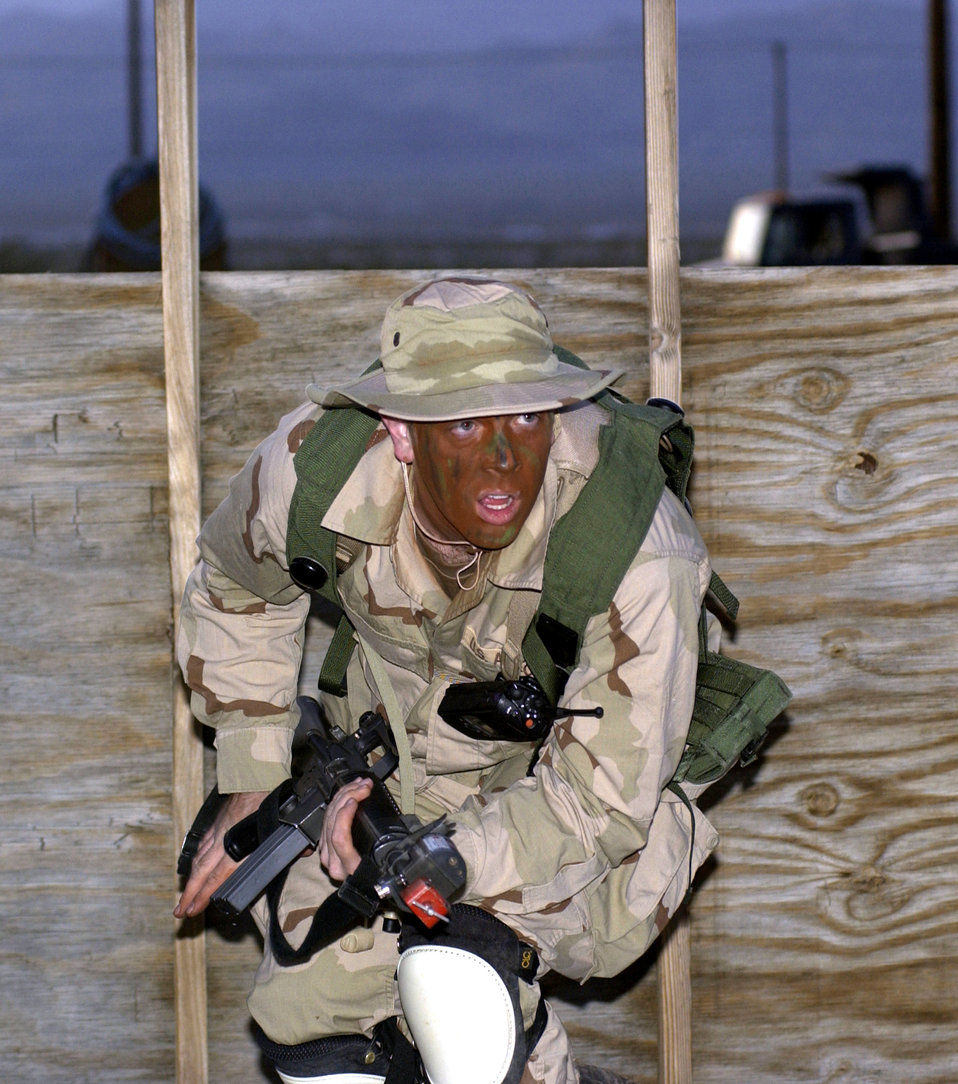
War games

NELLIS AIR FORCE BASE, Nev. -- First Lt. Eric Stride runs for cover during a training exercise here. He was on the opposing force trying to break into the training camp. The three-day exercise included training on first aid, convoys and map reading to help prepare 99th Civil Engineer Squadron Airmen for deployment. Lieutenant Stride is the 99th Communications Squadron's network control center crew commander.